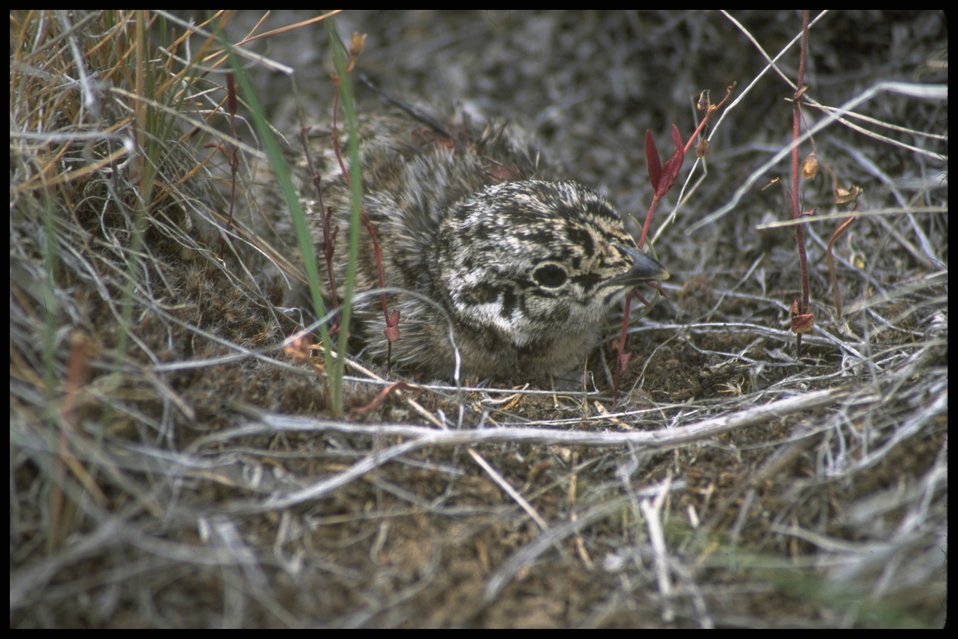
Sage Hen Chick, Lakeview District.